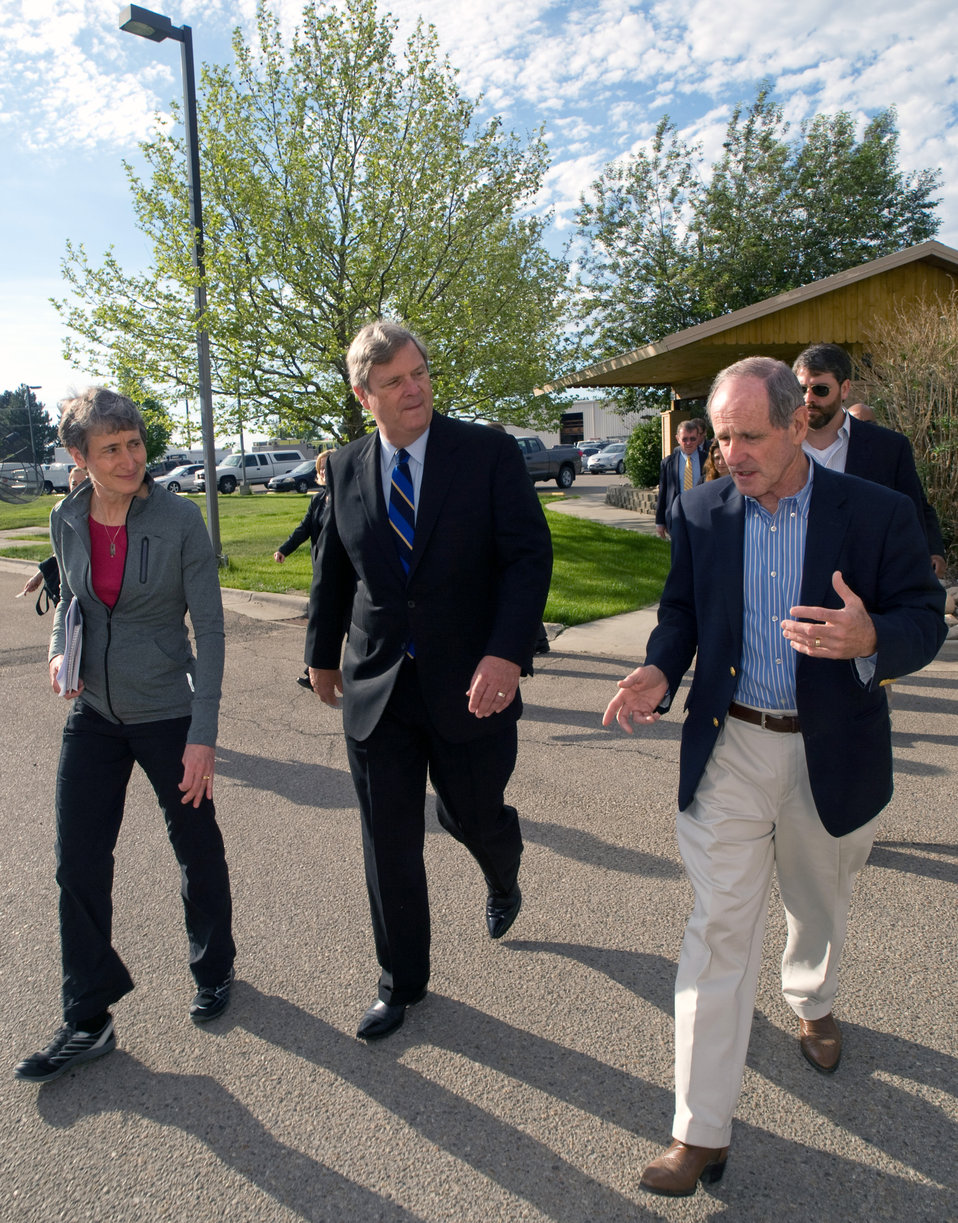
Agriculture Secretary Tom Vilsack tours the National Interagency Fire Center (NIFC) in Boise, ID on Monday, May 13, 2013. Agriculture Secretary Vilsack and Interior Secretary Jewell provided an outlook for the upcoming fire season and outlined the federal government’s efforts to ensure collaboration in protecting Americans from wildfire.